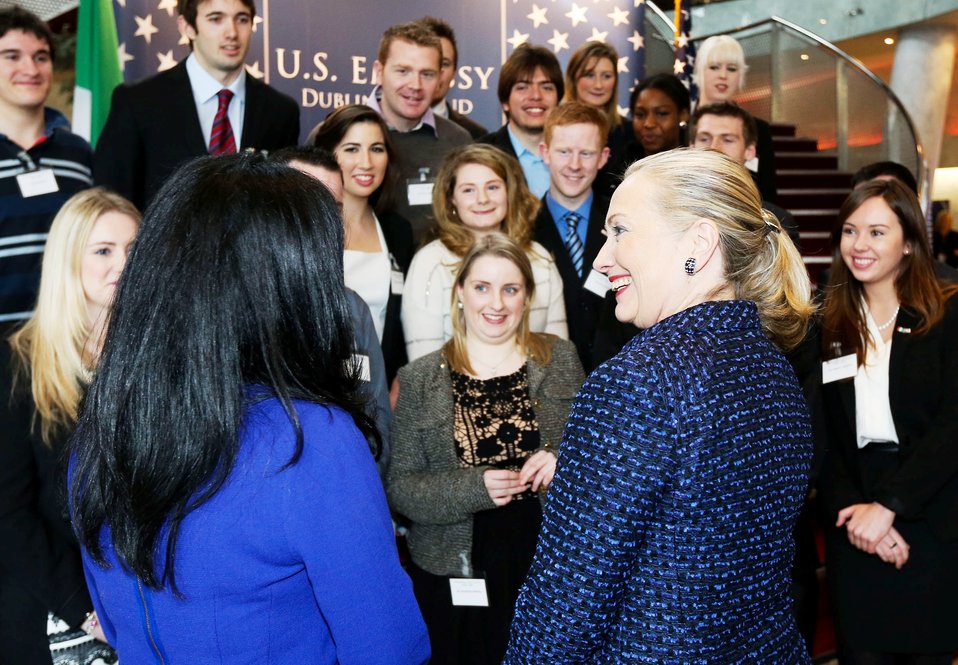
Secretary Clinton Speaks With Members of the Embassy Dublin Youth Council

U.S. Secretary of State Hillary Rodham Clinton speaks with members of the Embassy Dublin Youth Council at Dublin City University in Dublin, Ireland, December 6, 2012.